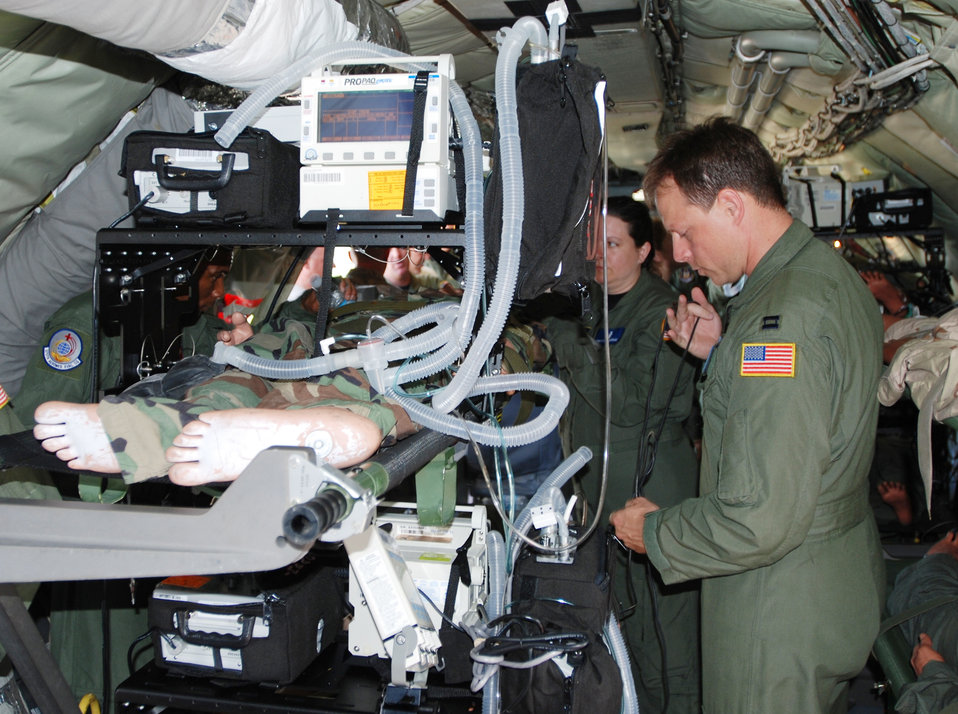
KC-135 could carry more critical patients

Capt. Arthur Anderson checks on aeromedical equipment during an exercise in a modified KC-135 Stratotanker June 18 at Scott Air Force Base, Ill. Captain Anderson is assigned to the 375th Aeromedical Evacuation Squadron.